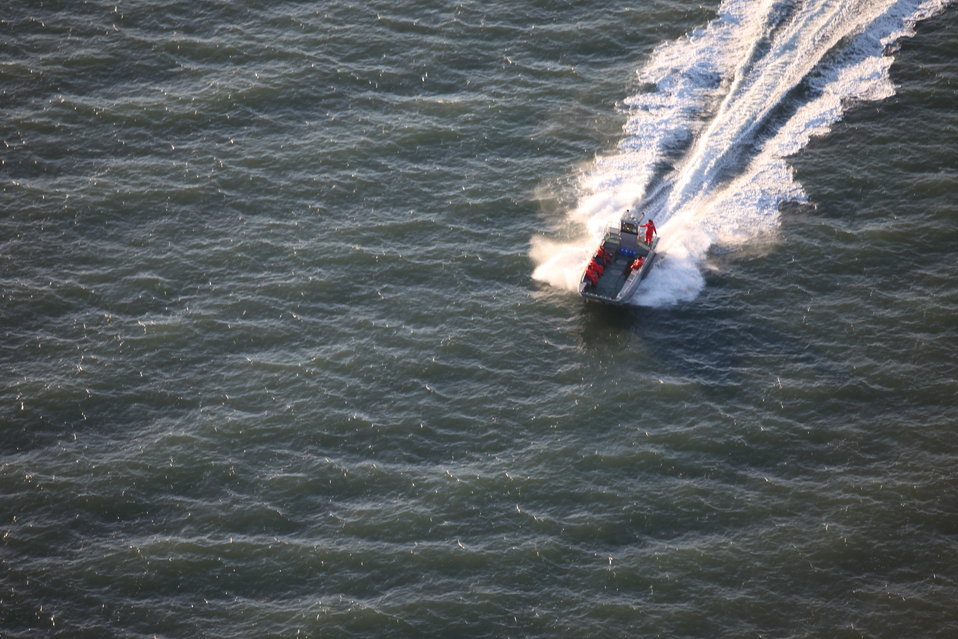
Stewart B. McKinney National Wildlife Refuge staff boat over to Faulkner Island to survey the damage caused by storm Sandy.